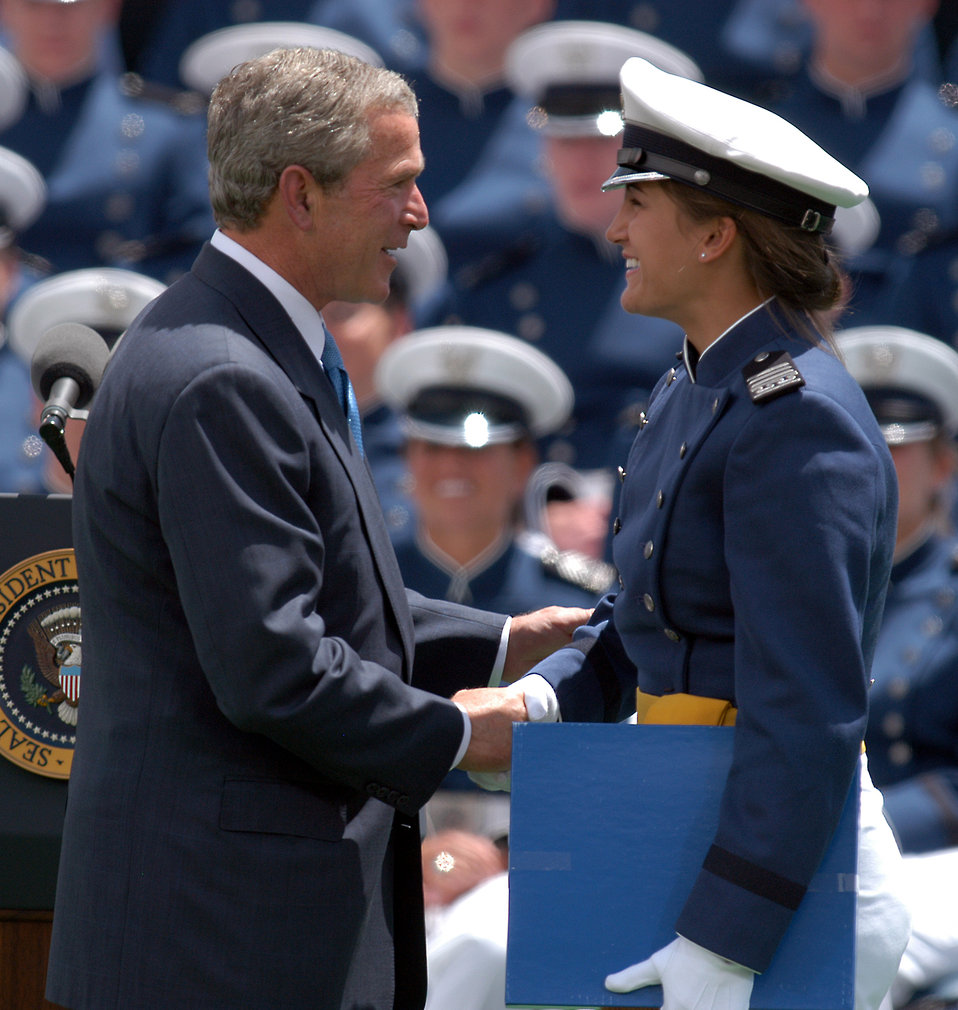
Bush speaks at graduation

U.S. AIR FORCE ACADEMY, Colo. -- President Bush shares a moment with a graduate of the Class of 2004 following his commencement address here June 2.